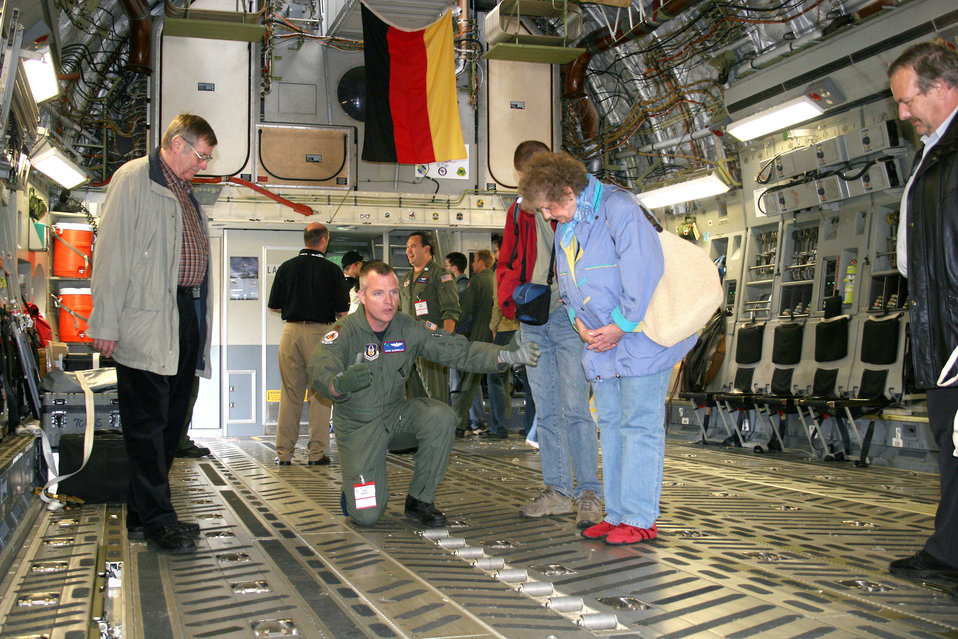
Berlin Air Show a hit

Maj. Dave McDonald demonstrates how cargo can be rolled onto the C-17 Globemaster III during the Berlin Air Show on May 19, 2006, at the Berlin-Schoenefeld Airport. Major McDonald is a 315th Airlift Wing pilot from Charleston Air Force Base, S.C. From May 19 to 21, 120,000 people visited the air show, which promoted the goals of enhancing interoperability among U.S. allies as well as the commitment to the preservation of Europe's security.